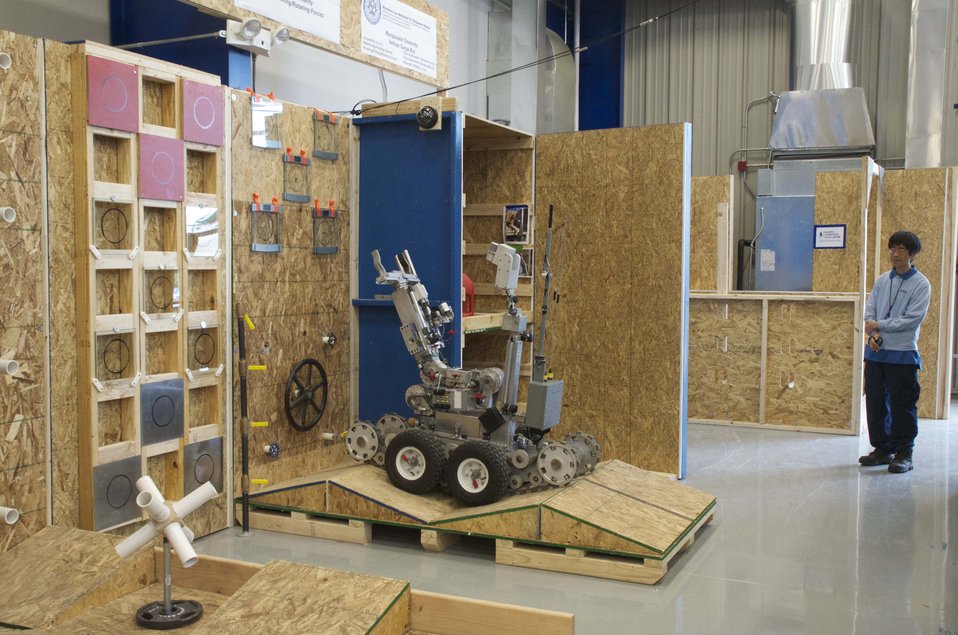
Hui Min Huang with robot

Hui-Min Huang, NIST software/mechanical engineer, observes a Montgomery County Bomb Squad robot attempt to turn various sizes of valve hand wheels in the Push/Pull/Rotary Forces test method.

Development of test methods at the NIST Robot Test Facility is funded in part by the NIST Office of Law Enforcement Standard's Counterterrorism and Response Technologies program.